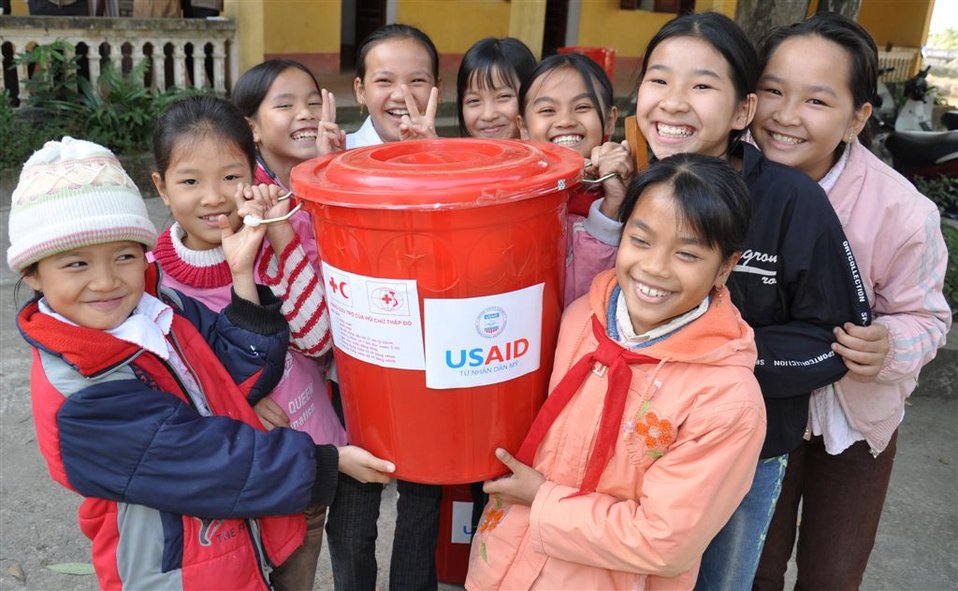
USAID provides household kits to families affected by flooding near Hanoi